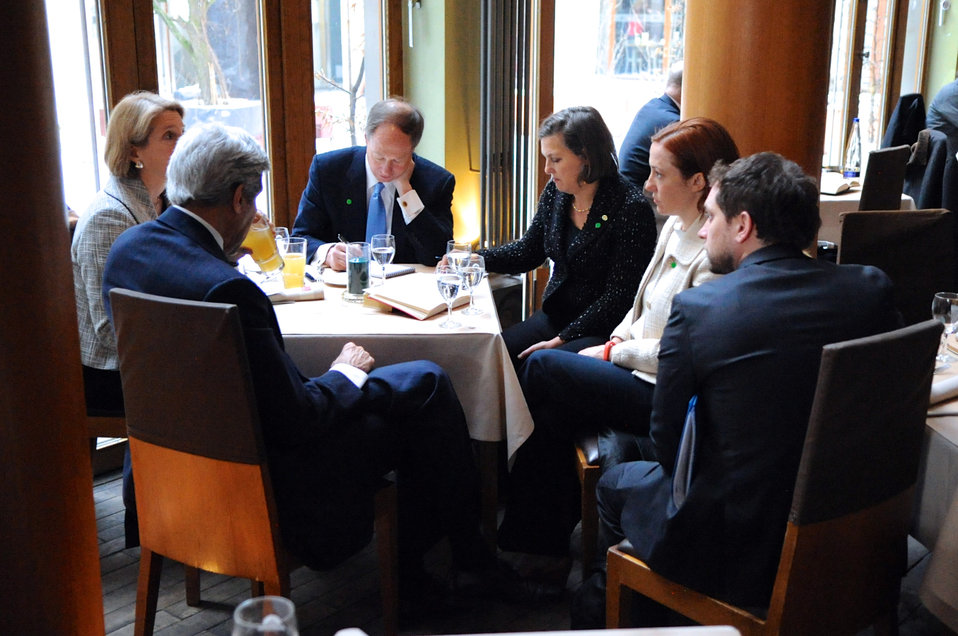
Secretary Kerry Meets With Staff at a Berlin Restaurant

U.S. Secretary of State John Kerry sips a glass of apple juice as he and members of his staff make an impromptu stop at a restaurant in the shadow of the Brandenburg Gate in Berlin, Germany, before a meeting with Chancellor Angela Merkel on January 31, 2014.